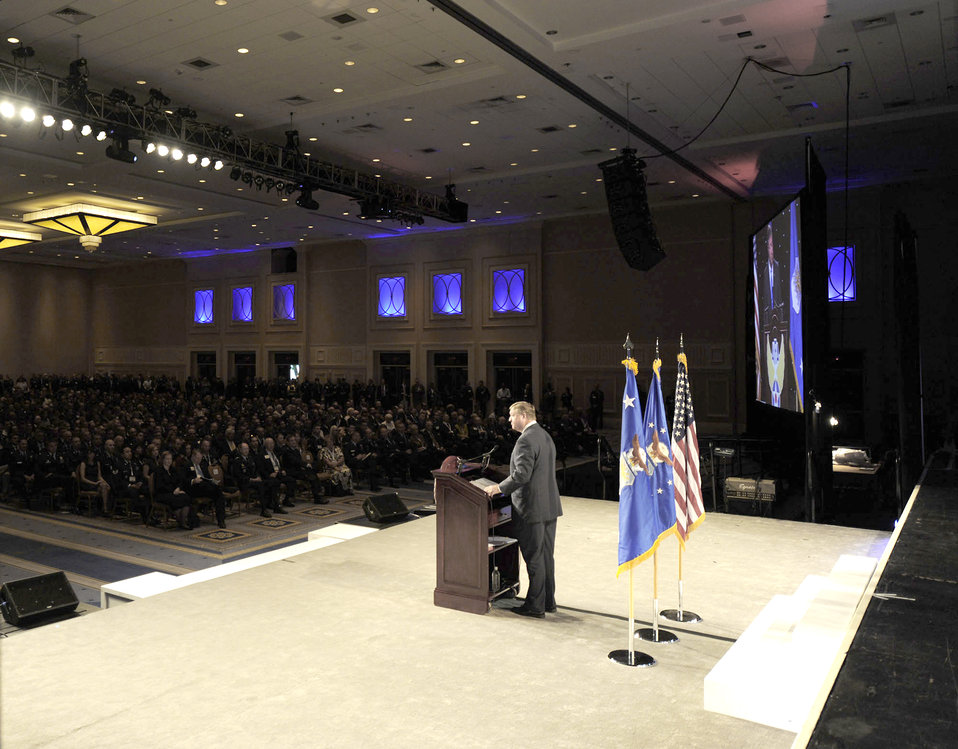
Secretary of the Air Force Michael Donley delivers his keynote speech during the opening morning of the Air Force Association's Air & Space Conference and Technology Exposition, Sept. 13, 2010, in National Harbor, Md. In concluding his speech, Secretary Donley thanked the AFA for